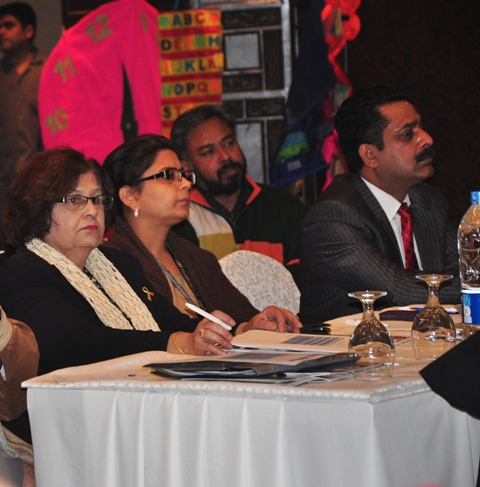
Workshop Participants